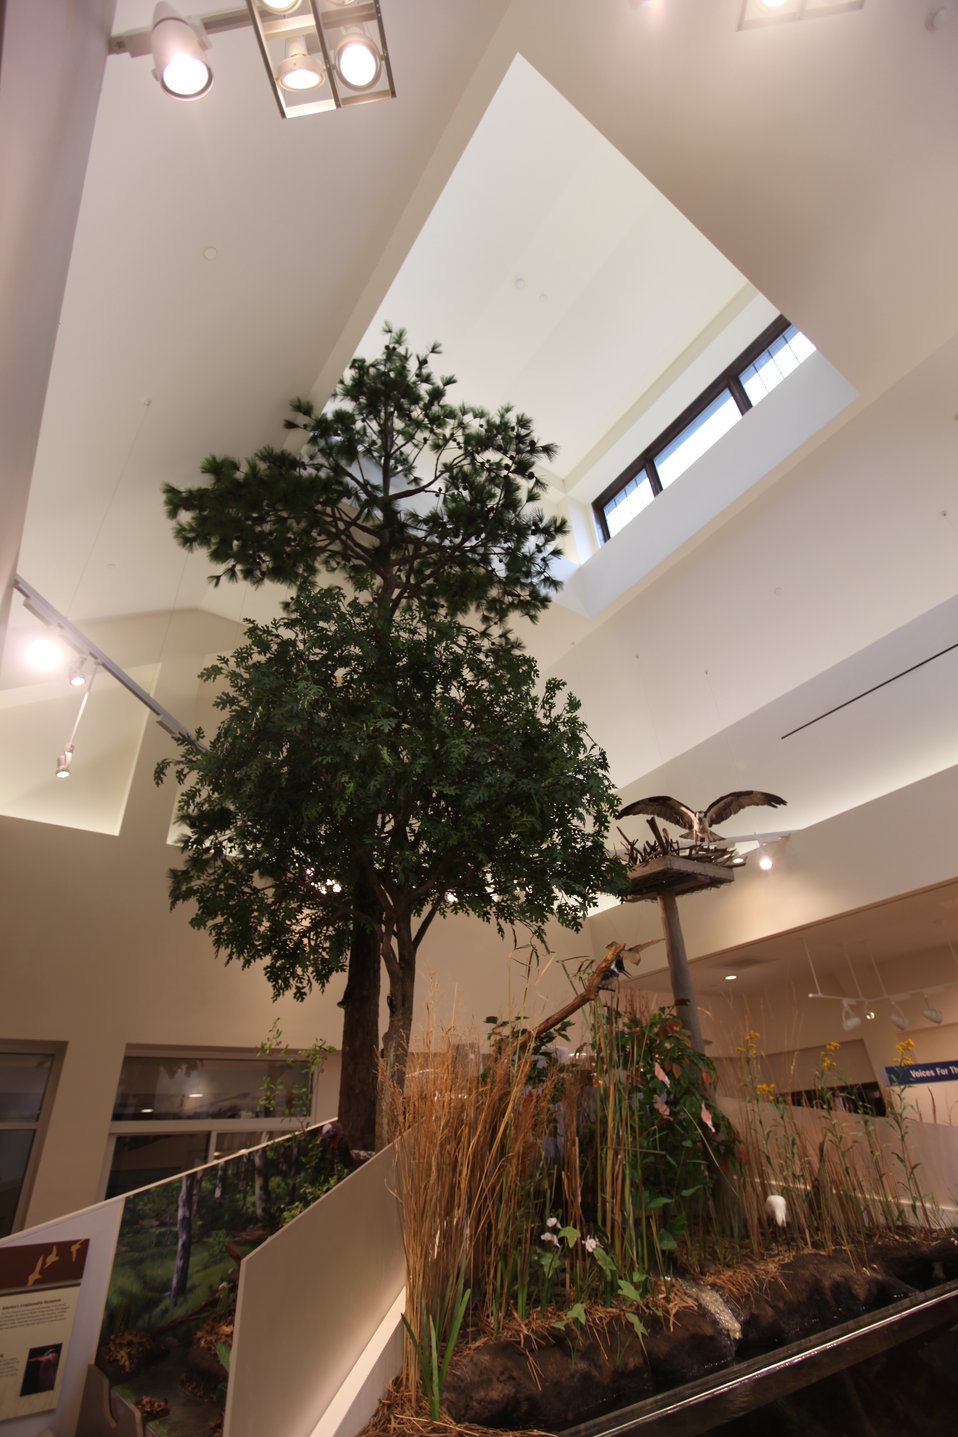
Tree exhibit